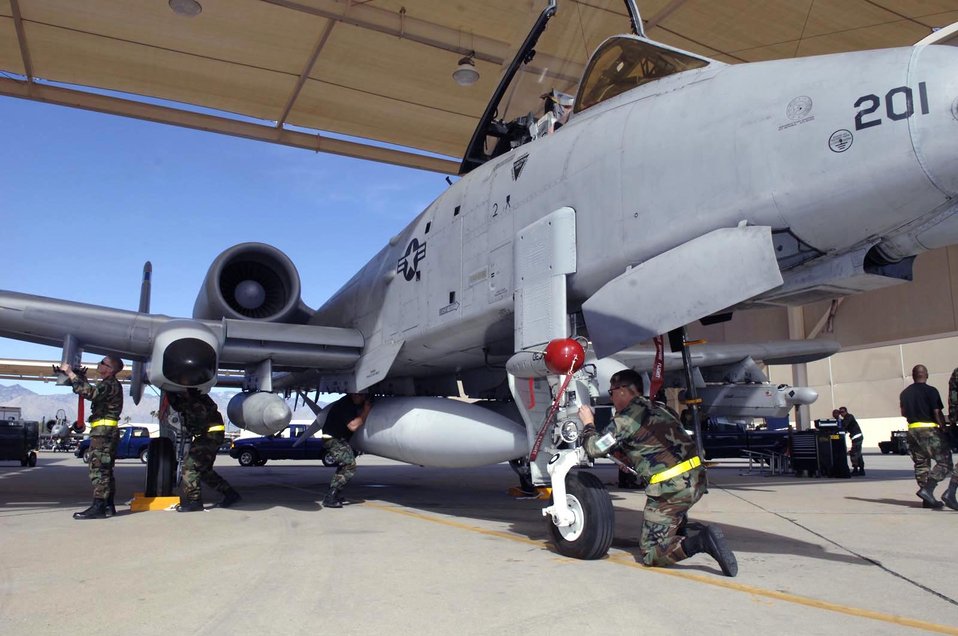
CORONET WHITE 07-ACC-09

Airmen from the 355th Maintenance Group prepare an A-10 Thunderbolt II for launch Feb. 17 during an operational readiness exercise at Davis-Monthan Air Force Base, Ariz. Inspectors test the ability of 355th Wing Airmen to prepare to deploy and fight when called.